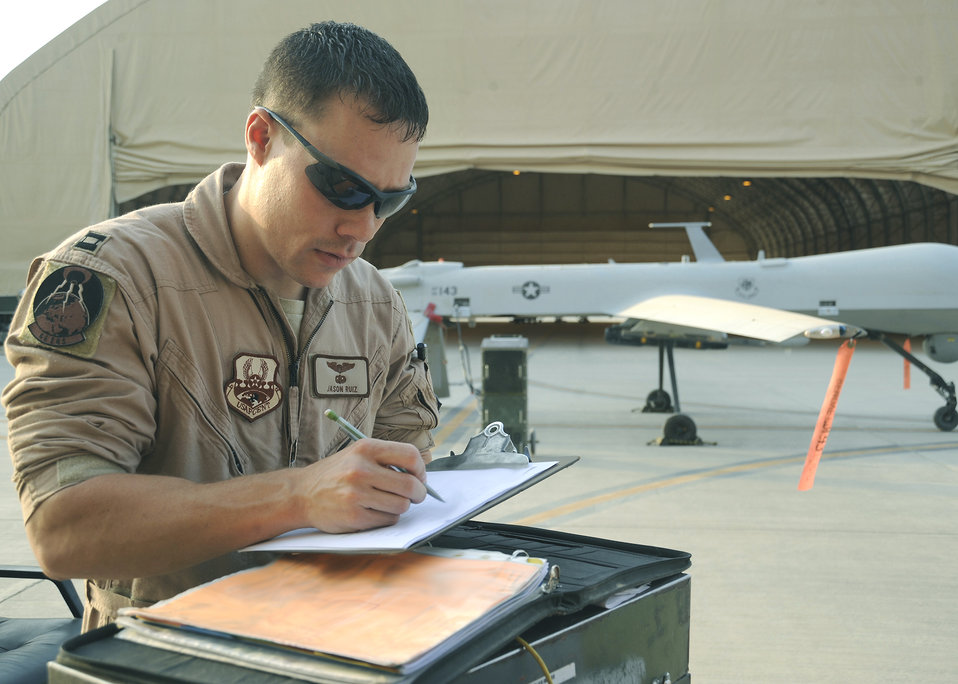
Balad Predators

Capt. Jason Ruiz does a preflight checklist on his MQ-1B Predator to prepare for a